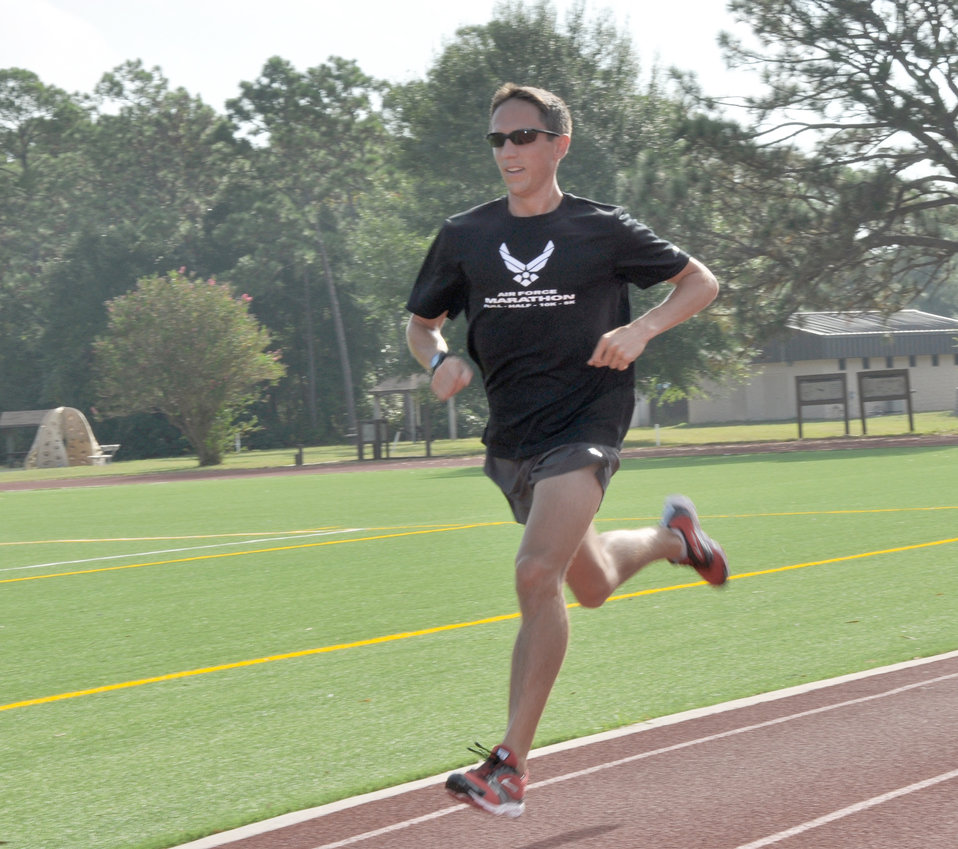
2010 AF Marathon

Capt. Ben Payne runs a lap around the track at the Aderholt Fitness Center Sept. 24, 2010 at Hurlburt Field, Fla. Captain Payne finished first in the men's half marathon during the during the 2010 Air Force Marathon at Wright-Patterson Air Force Base, Ohio, Sept. 17-18. Captain Payne is a pilot with the 34th Special Operations Squadron at Hurlburt Field.